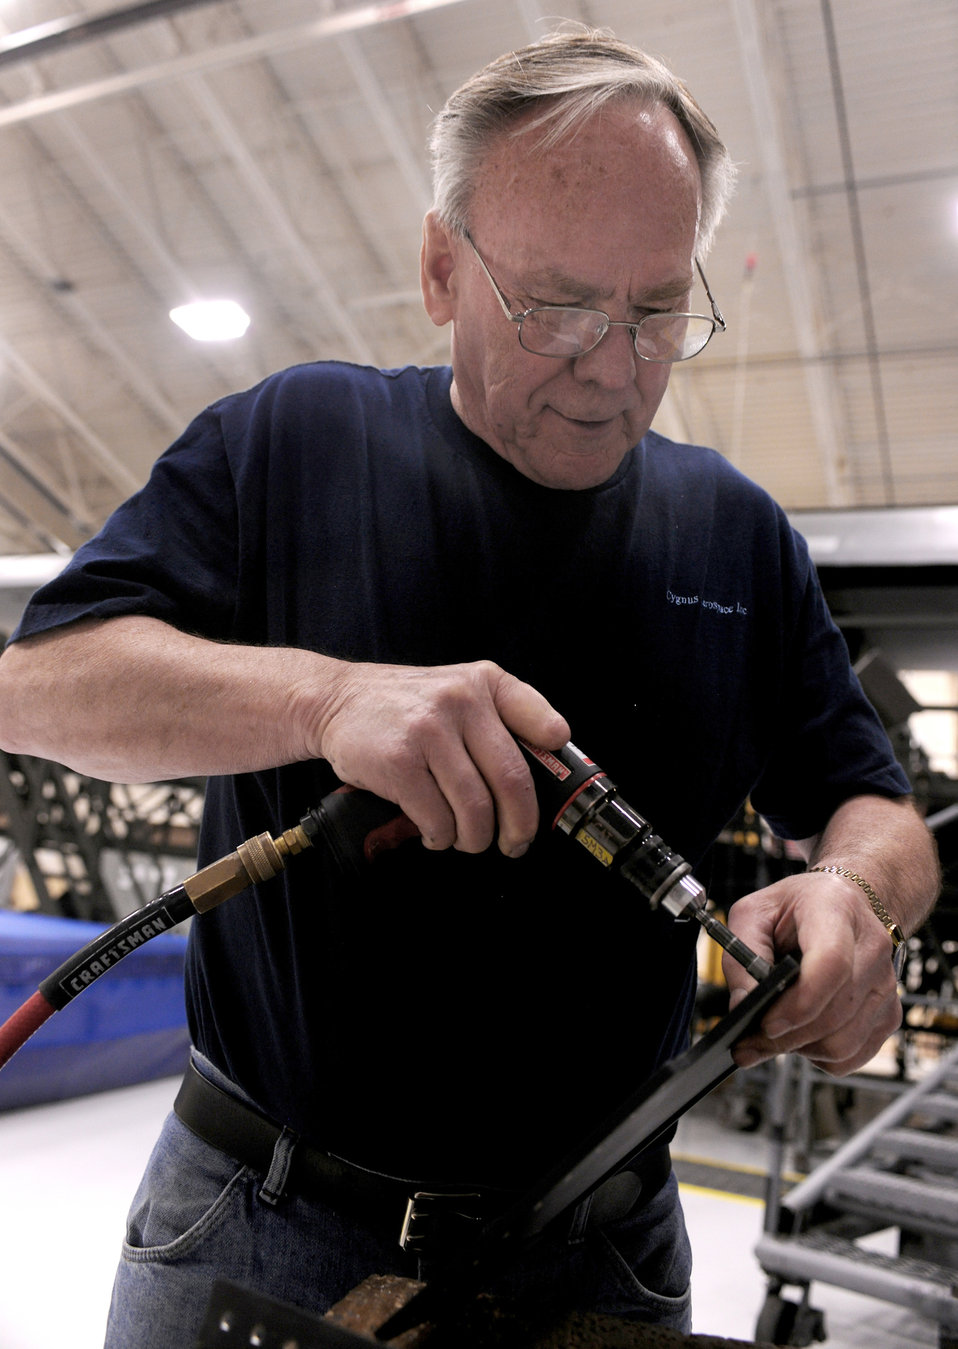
Loadmaster seat

Richard Bradshaw, an aircraft structural technician, smoothes a metal component during installation of a loadmaster crashworthy seat April 7, 2011, at Moody Air Force Base, Ga. Aircraft engineers and technicians there are currently engineering the first loadmaster crashworthy seat in Air Combat Command to be trial tested in an HC-130P Combat King.